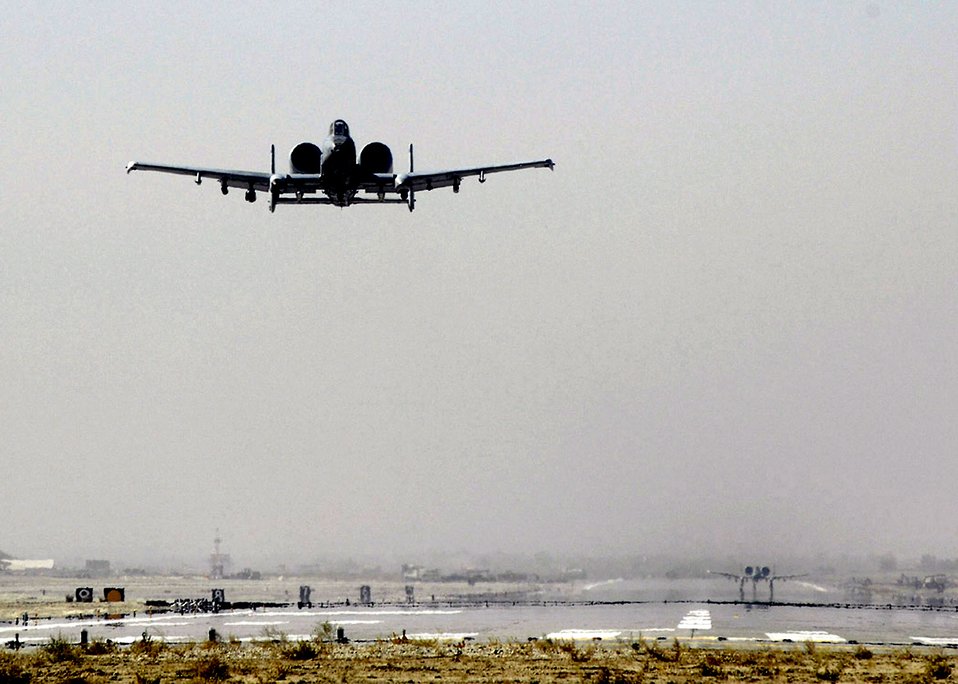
Feb. 19 airpower summary: A-10s conduct show of force

An A-10 Thunderbolt II takes off from Bagram Airfield, to fly a combat sortie in support of Operation Enduring Freedom. The A-10 has excellent maneuverability at low air speeds and altitude, and is a highly accurate weapons-delivery platforms.